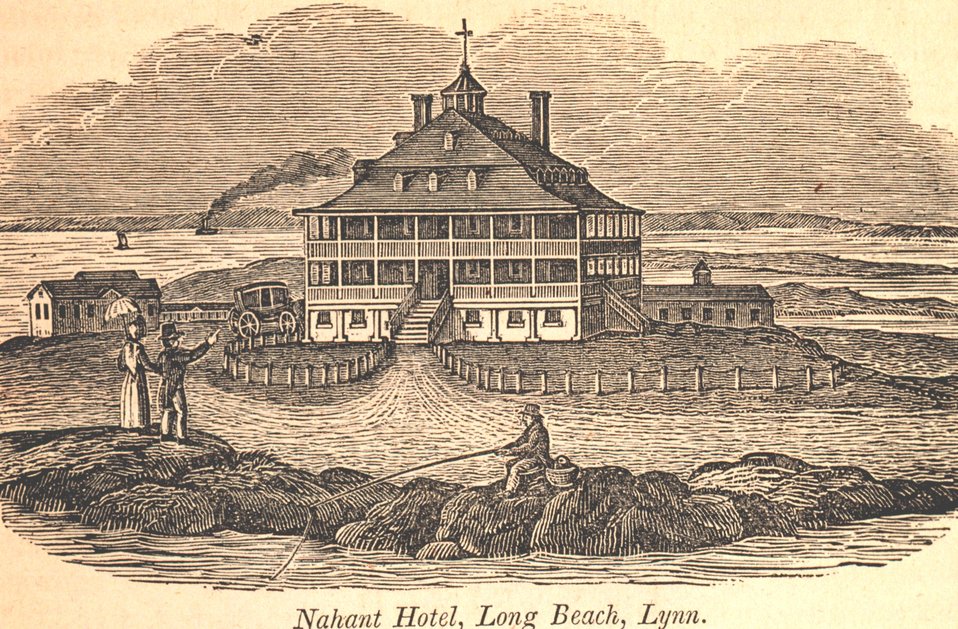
The Nahant Hotel at Long Beach. This hotel was constructed of stone and had over one hundred rooms. In: Historical Collections ... of Every Town in Massachusetts. 1841.